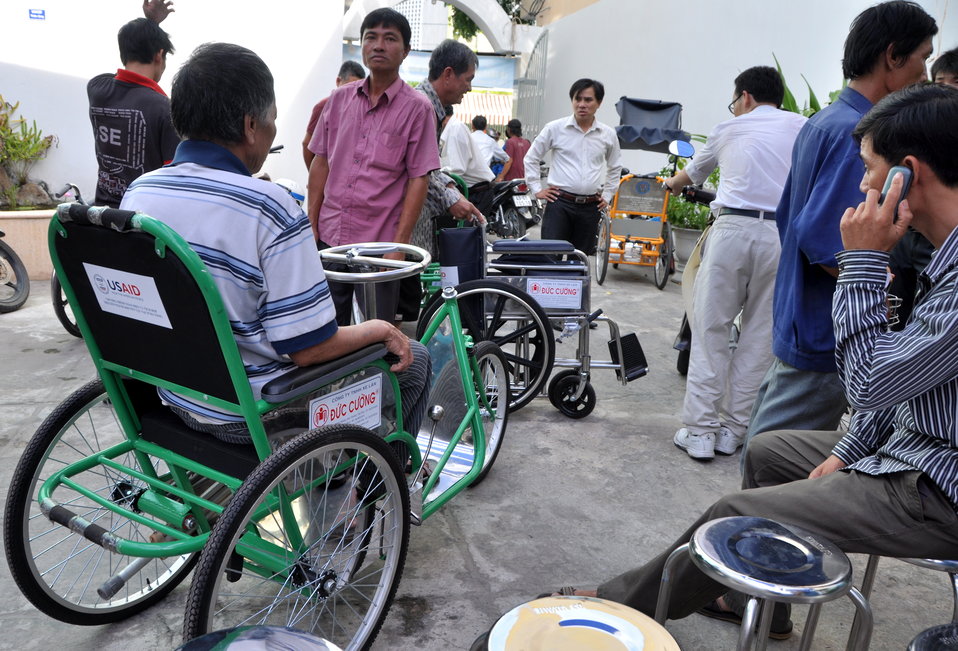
USAID Project Supports Rehabilitation Department for Children and Wheelchair Distribution in Danang

Beneficiaries in Danang, Vietnam, receive wheelchairs.